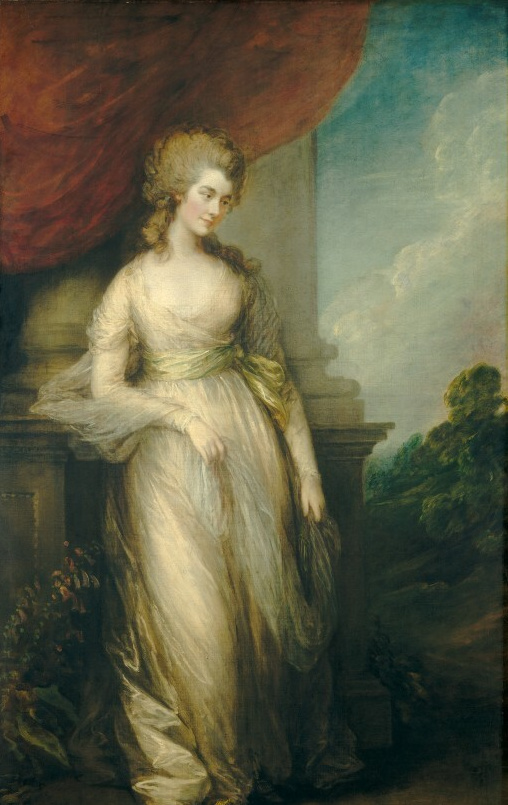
Thomas Gainsboroguh Georgiana Duchess of Devonshire 1783